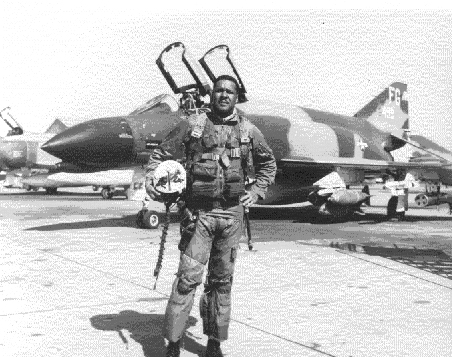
General James

Daniel